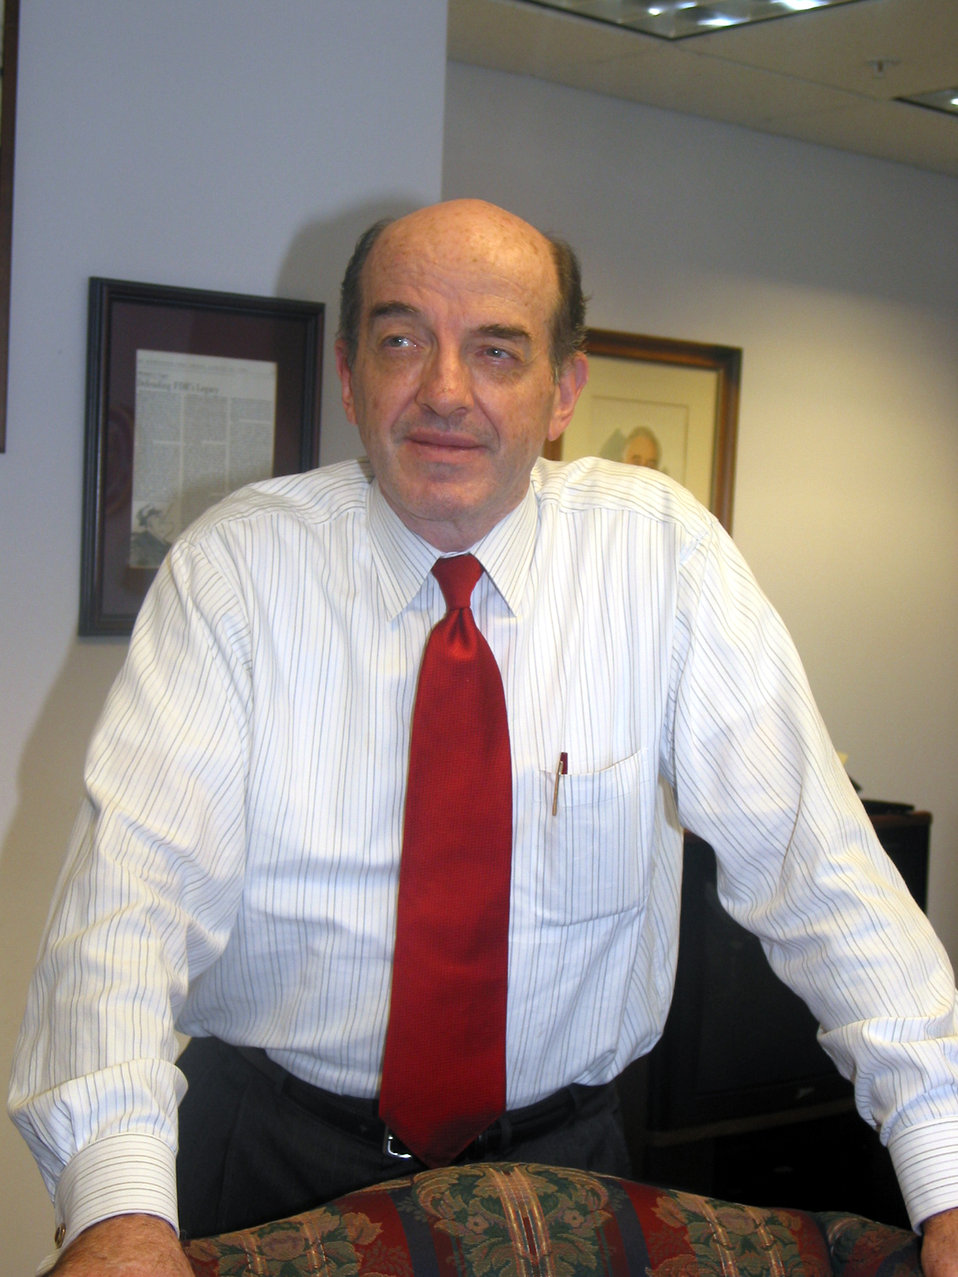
ppmjc-4